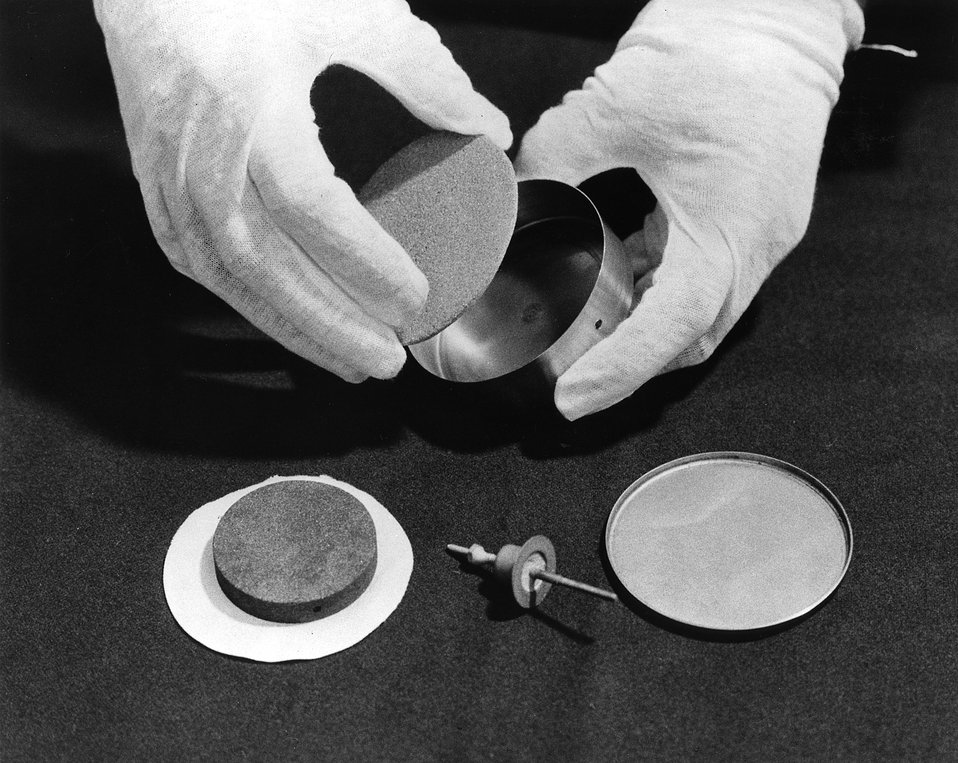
Assembling the components of a Lithium-Sulphur Storage Cell under development at Argonne.
c.1972